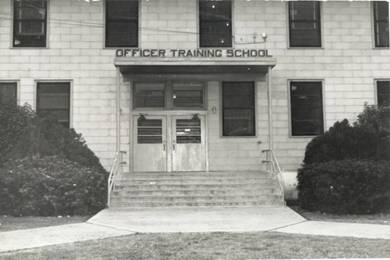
OTS 50th Anniversary

Air Force Officer Training School is celebrating its 50th Anniversary. OTS first opened its doors at Lackland Air Force Base, Texas, in 1959 with a class of 89 trainees. During the past 50 years, OTS officials have trained and commissioned more than 100,000 men and women who have answered their nation?s call and served in peace and war with the motto??Always with Honor.?